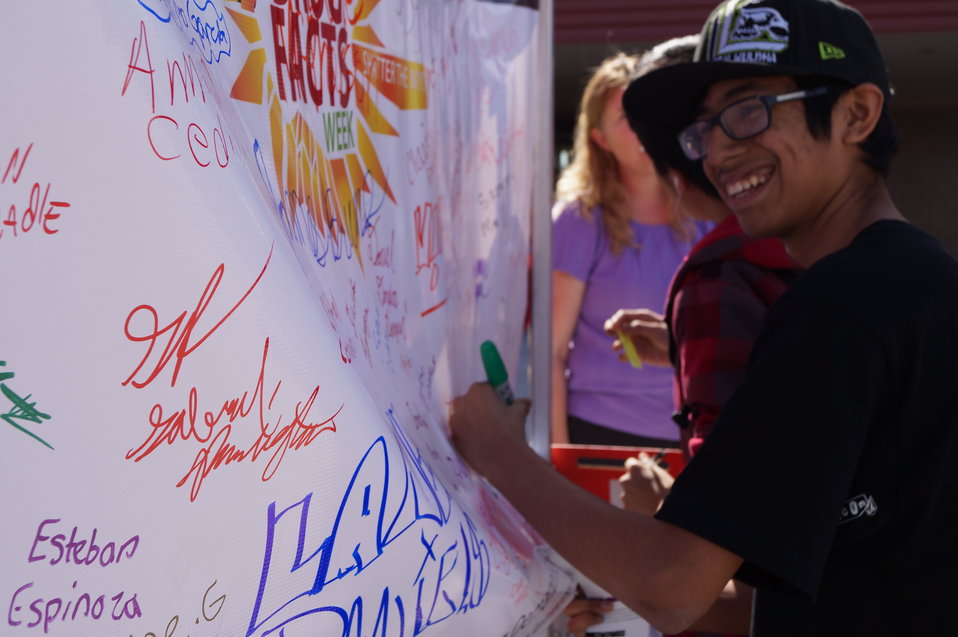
National Drug Facts Week - GILA RIDGE HS

The Drug Demand Reduction Program out of Yuma Arizona held numerous events at local schools to support NIDA's National Drug Facts Week, Jan. 27-Feb. 2 2014. Teens participated in drug awareness games, and helped to Shatter the Myths about teen substance abuse.